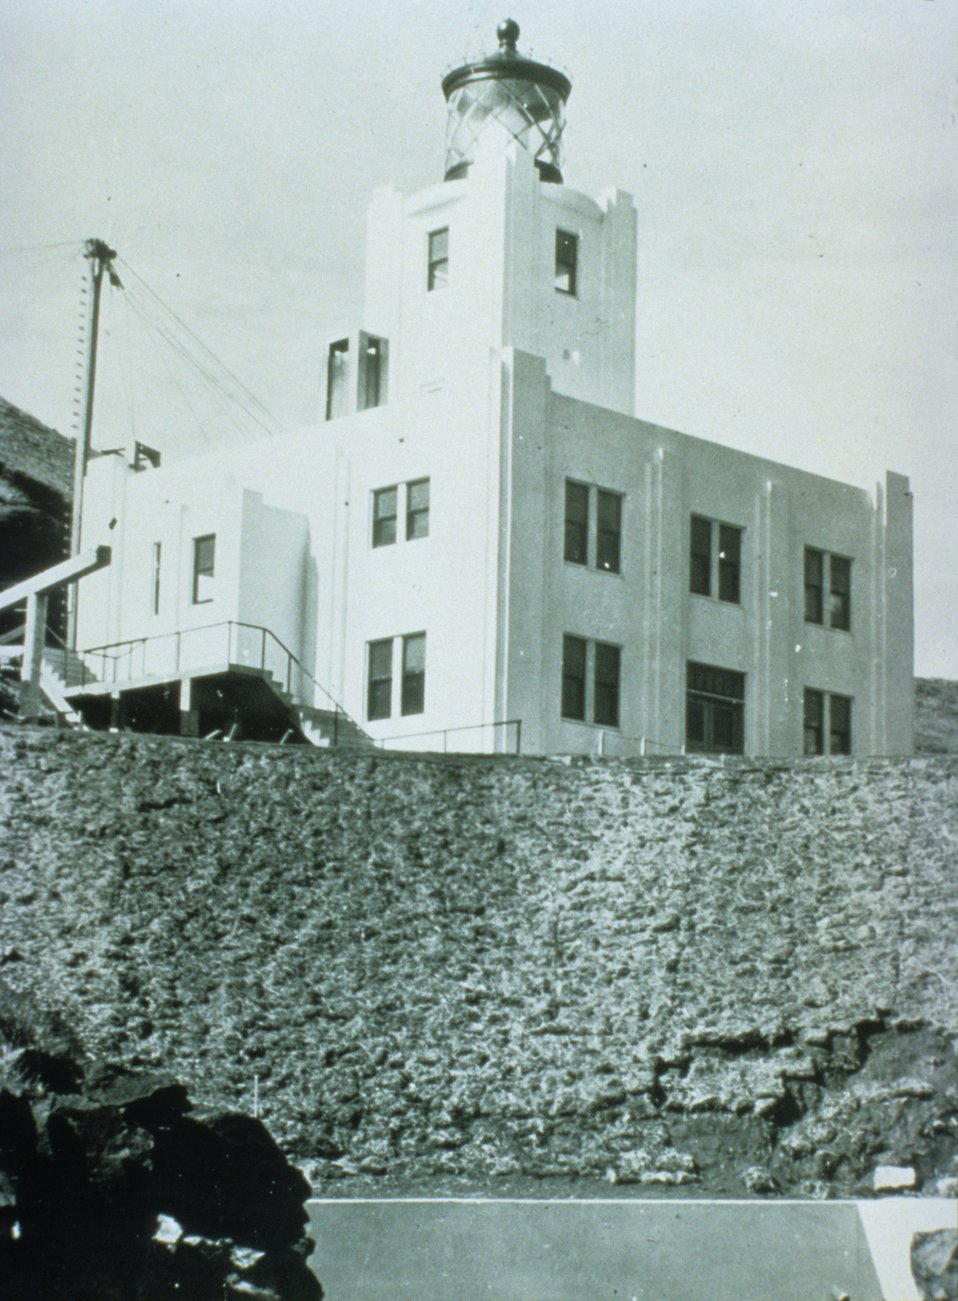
Scotch Cap Lighthouse